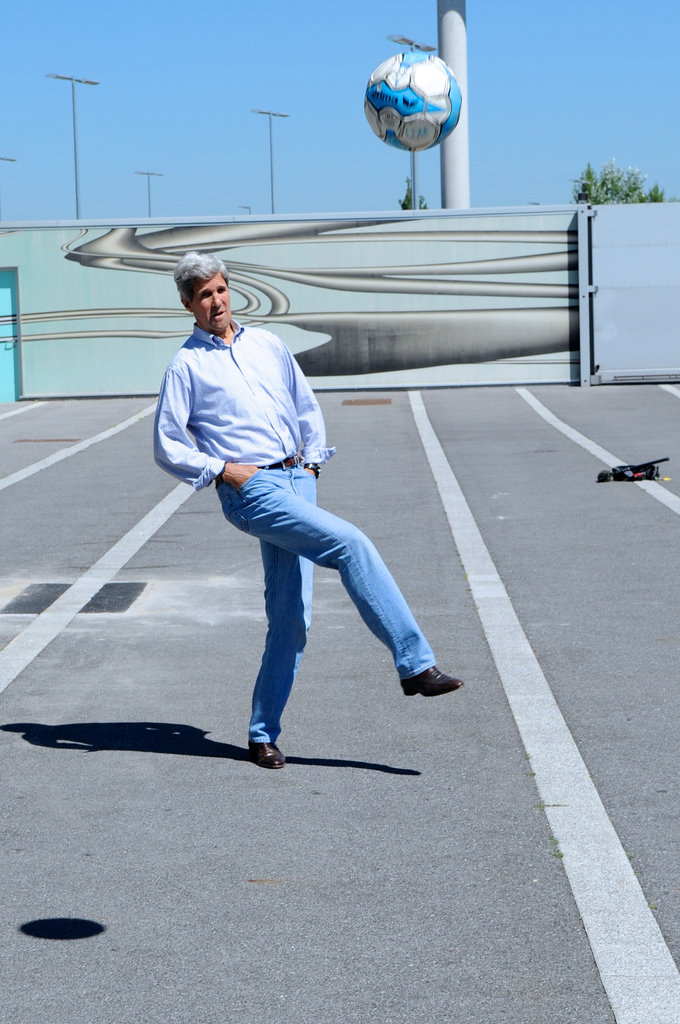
Secretary Kerry Enjoys the Austrian Sunshine

U.S. Secretary of State John Kerry, a college soccer player, watches a shot he kicked during a refueling stop in Vienna, Austria, on August 2, 2013.